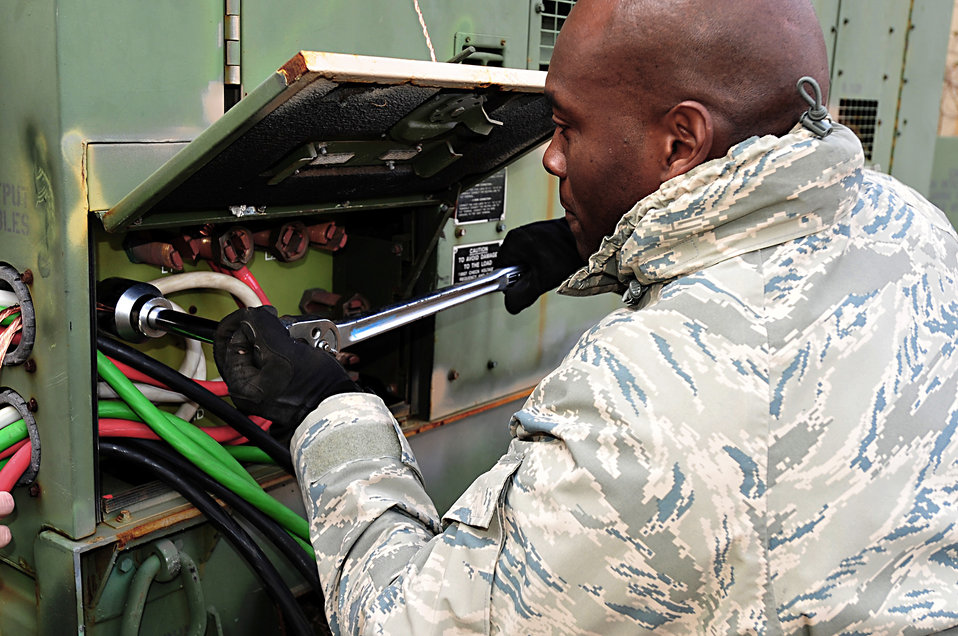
Generators installed at Misawa Inn

U.S. Air Force Tech. Sgt. Danny Dottin, 18th Civil Engineer Squadron generator maintenance shop, connects power cables to a generator at the Misawa Inn Mar. 14, 2011, Misawa Air Base, Japan. Members of the 18 CES came to assist with recovery operations.